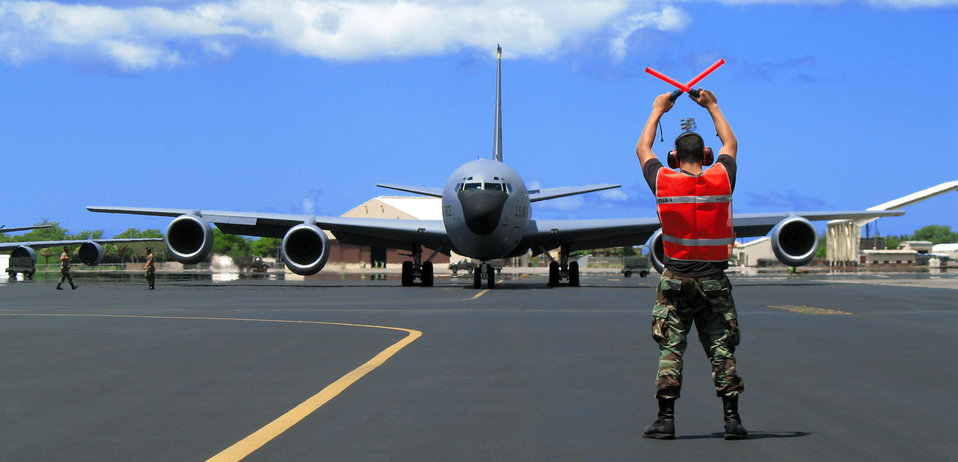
KC-135: 50 years old and still refueling

Staff Sgt. Kristian Miraflor marshals a KC-135 Stratotanker for takeoff from Hickam Air Force Base, Hawaii, on Thursday, July 27. Sergeant Miraflor is assigned to the Hawaii Air National Guard's 154th Aircraft Maintenance Squadron.